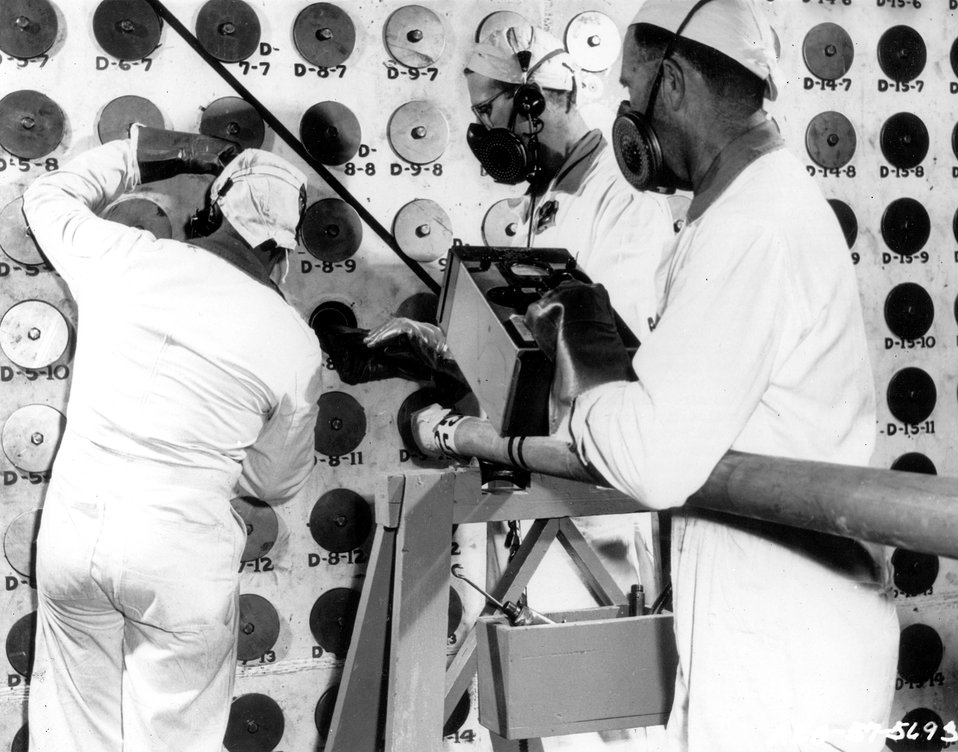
REMOVING 'SPENT' URANIUM FROM SOUTH FACE OF REACTOR, BROOKHAVEN NATIONAL LABORATORY.